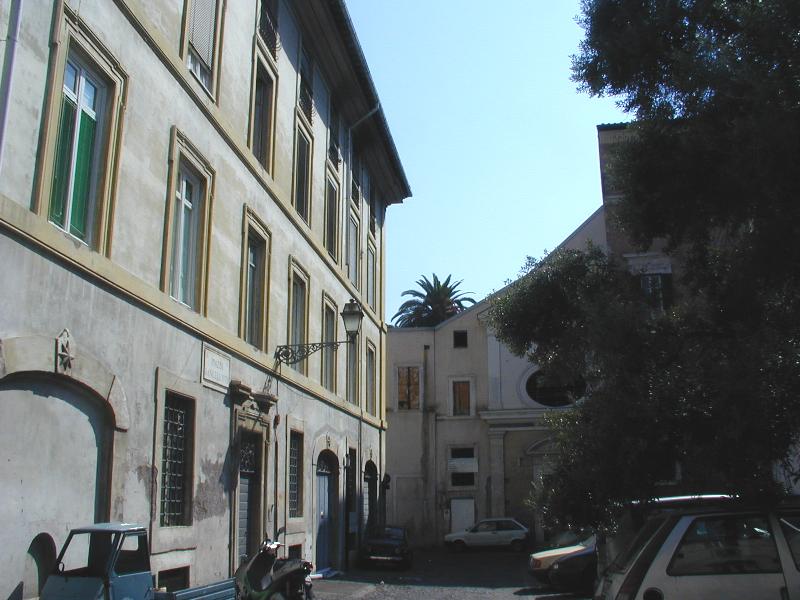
000815 5 p s simeone